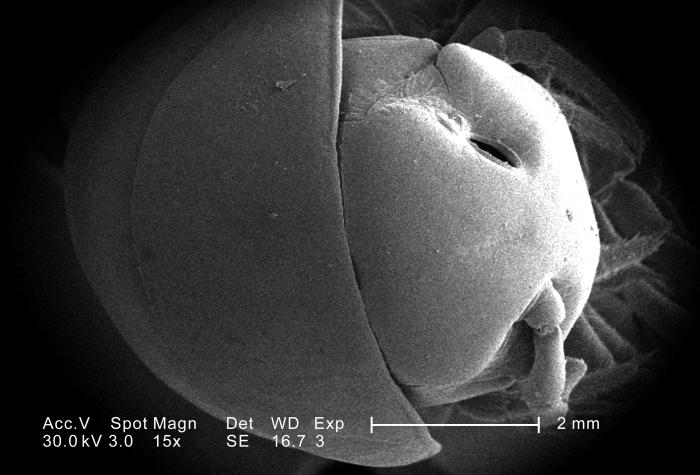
This scanning electron micrograph (SEM) depicted a magnified view of the head region of an unidentified millipede found outside on the ground in the Decatur, Georgia suburbs; Magnified 112x.